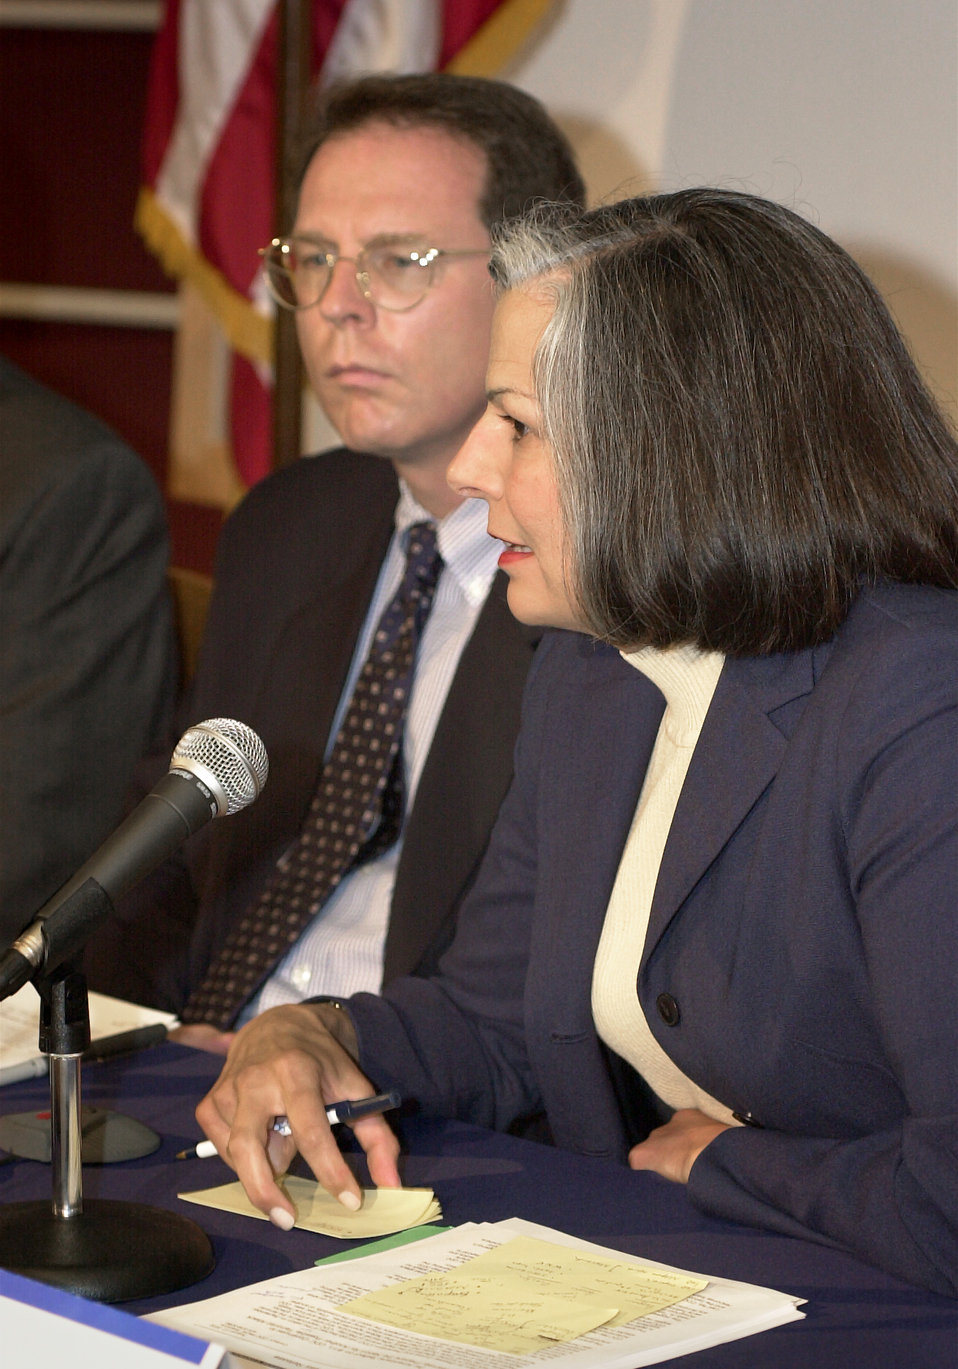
Centers for Disease Control and Prevention Bioterrorism Preparedness Press Briefing, August 27, 2002.